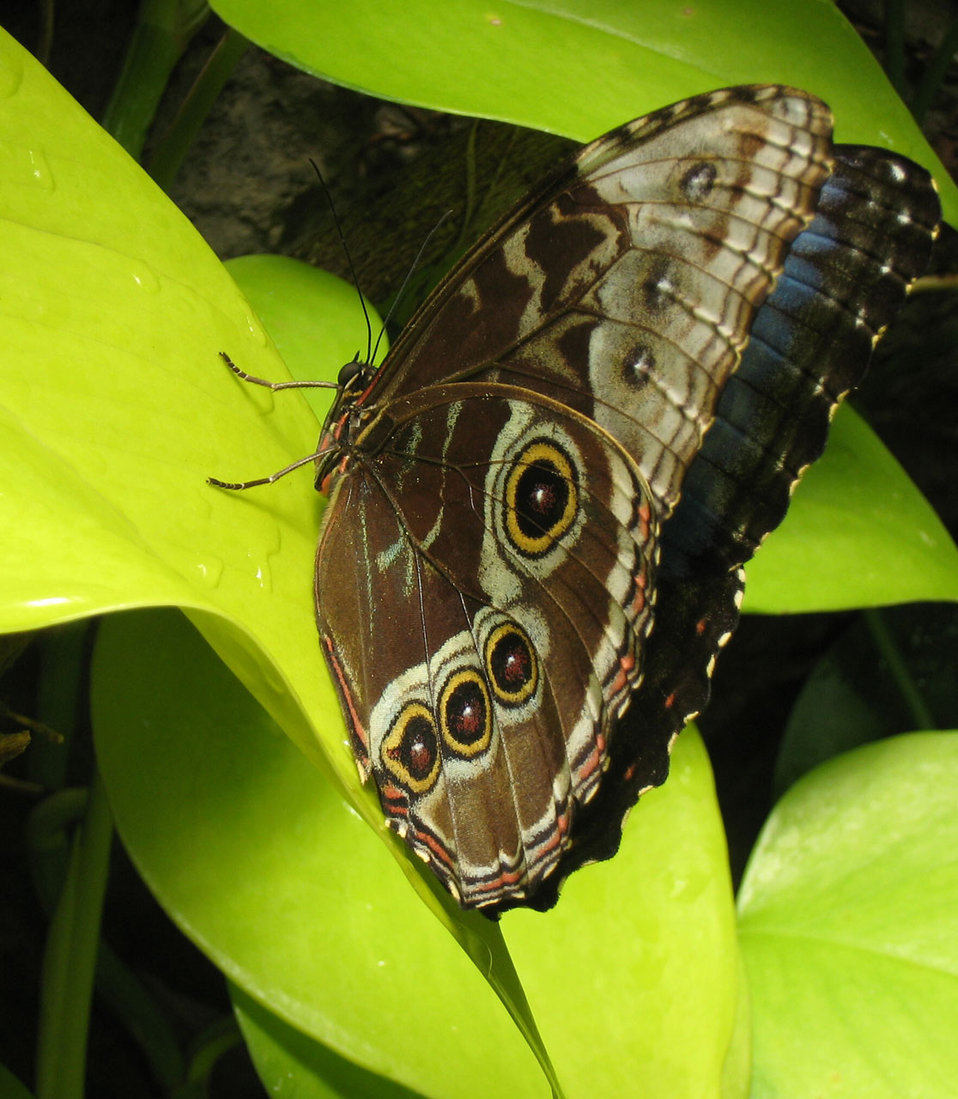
Closed wing butterfly

Butterfly with wings closed.